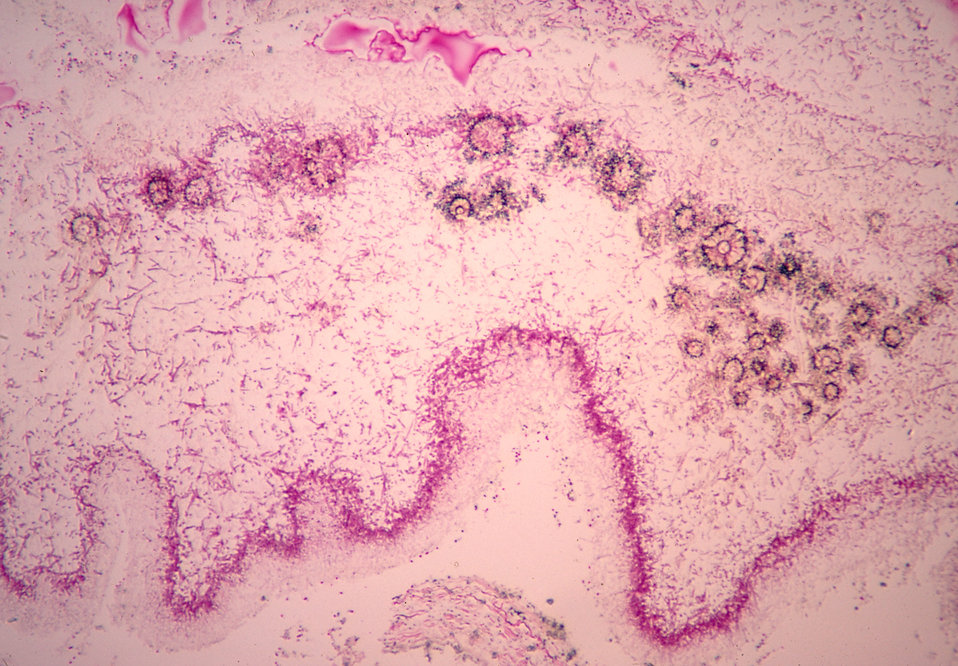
This micrograph depicts the histopathologic features of aspergillosis including the presence of conidia-laden conidiophores.